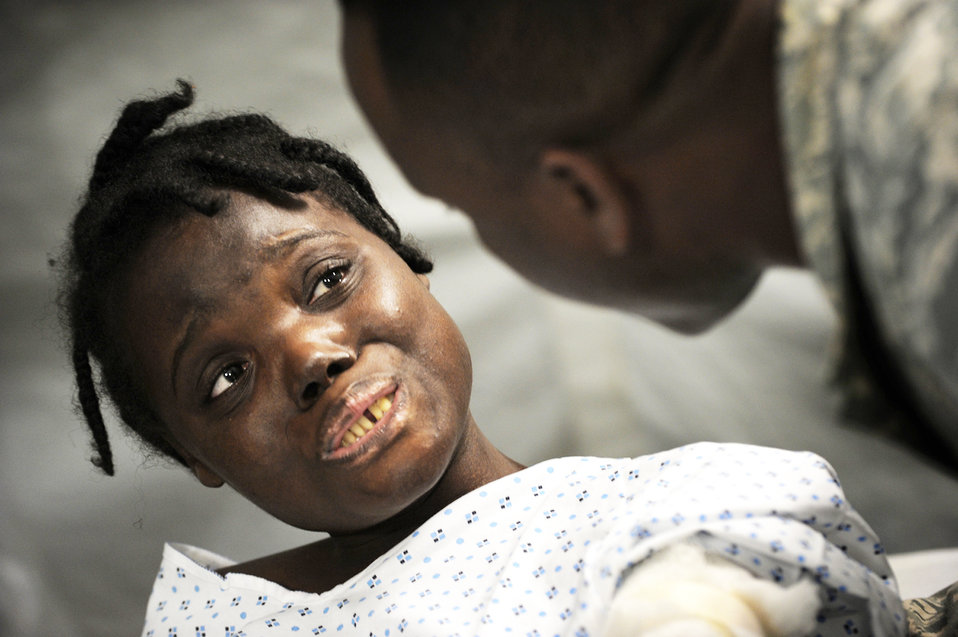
Airmen provide care, compassion to people of Haiti

An American servicemember treats an earthquake survivor Feb. 3, 2010, at an expeditionary medical facility located along the harbor of Port-au-Prince, Haiti. A 7.0-magnatude earthquake struck Haiti Jan. 12, leaving thousands of Haitians displaced and without access to food, water and vital medical care.